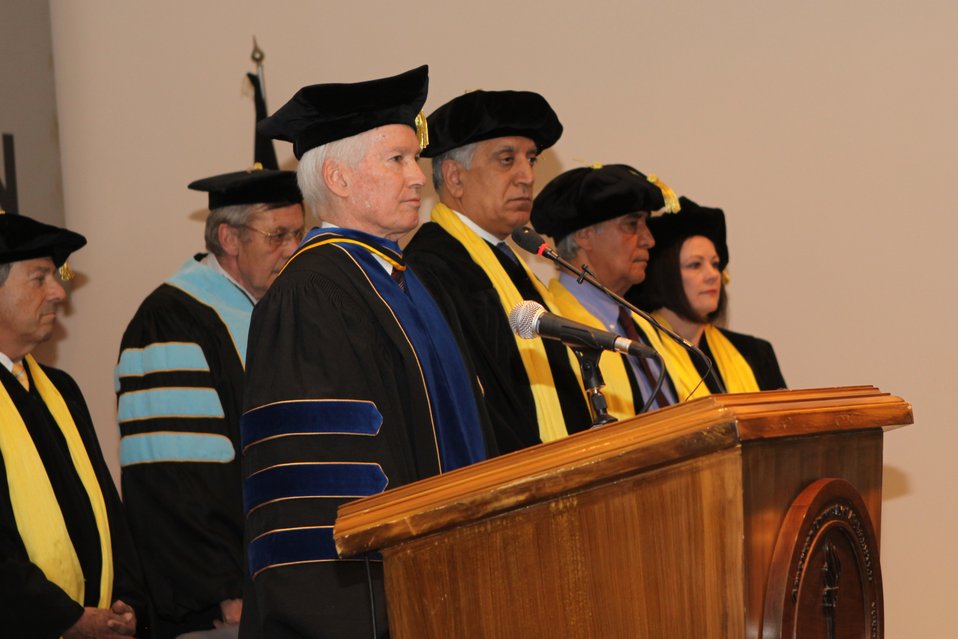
100526 AUAF Graduation 126